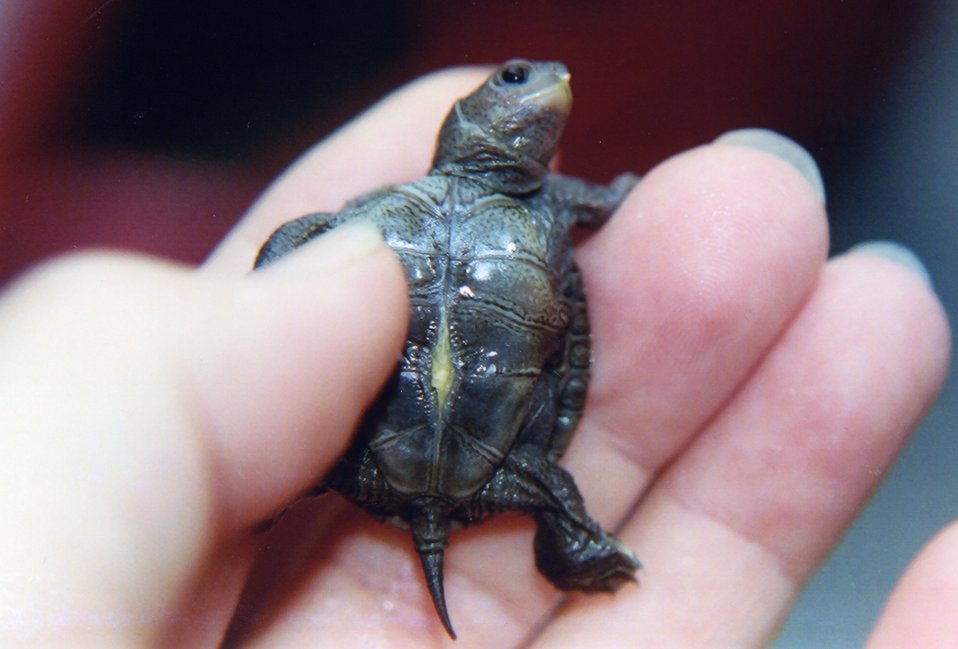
Newly hatched diamondback terrapin with egg sac and egg tooth.